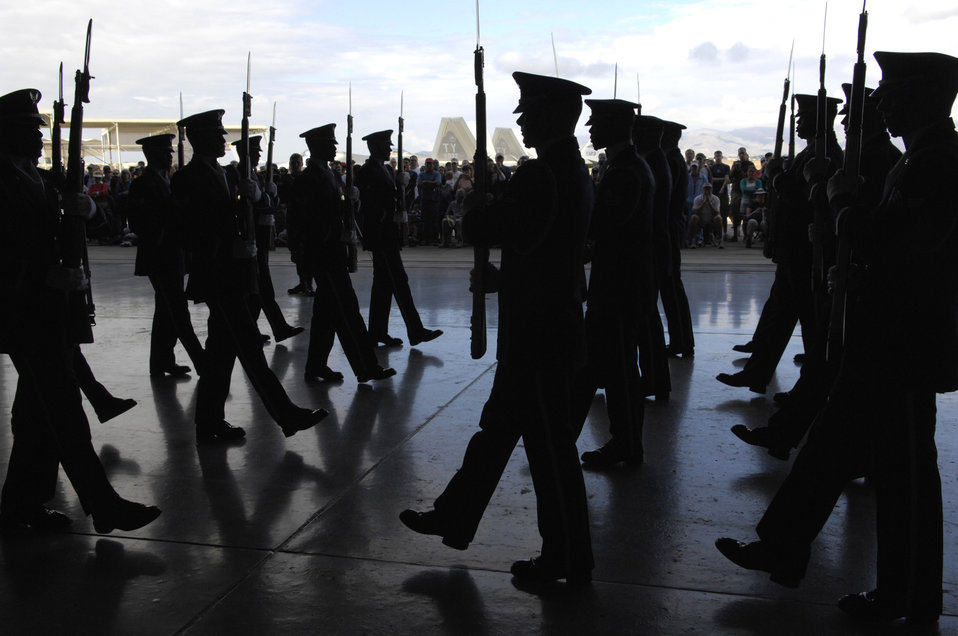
Showcasing the Air Force mission

The United States Air Force Honor Guard Drill Team performs March 24 during the Luke Air Force Base, Ariz., air show. The drill team is the traveling component of the Air Force Honor Guard and tours Air Force bases worldwide showcasing the precision of today's Air Force to recruit, retain and inspire Airmen for the Air Force mission.